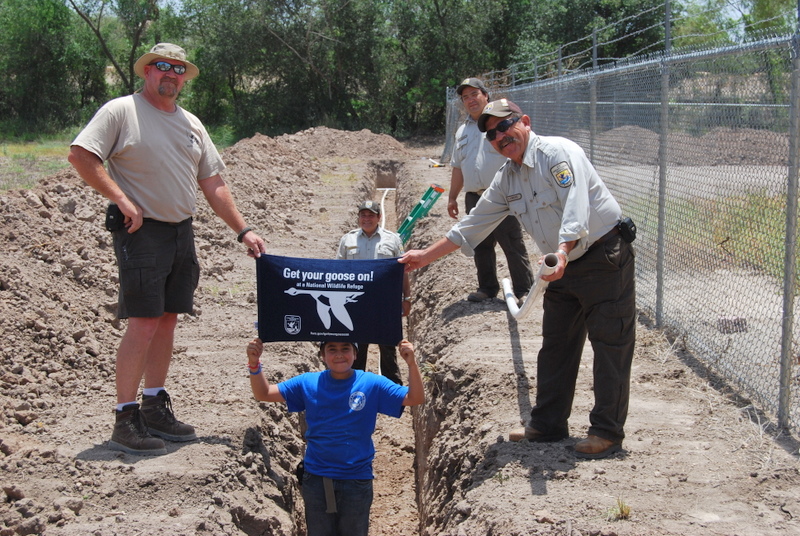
Get Your Goose On!

Digging a trench at the Lower Rio Grande Valley National Wildlife Refuge in Southern Texas.